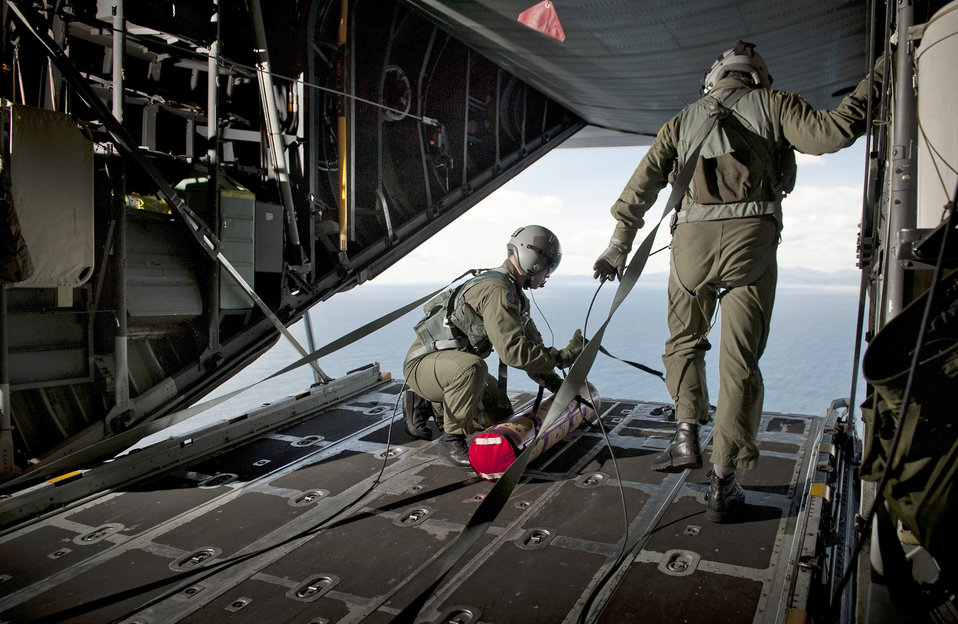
Monitoring ocean currents

Staff Sgt. Blake Landry (left) and Senior Master Sgt. Chris Walker prepare to deploy a buoy from a C-130 Hercules April 29, 2011, off the eastern coast of Japan. Sergeants Landry and Walker are loadmasters assigned to the 36th Airlift Squadron at Yokota Air Base, Japan.